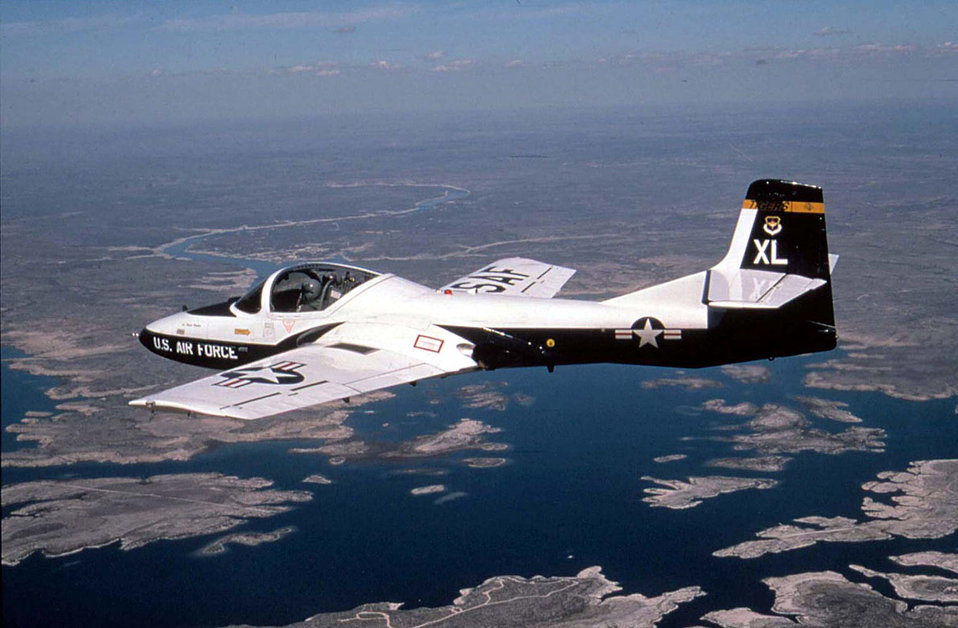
T-37 Tweet

FILE PHOTO -- A T-37 Tweet aircraft from the 85th Fighter Training Squadron, Laughlin AFB, Texas, flies over Lake Amistad during a training mission. The T-37 Tweet is a twin-engine jet used for training undergraduate pilots, undergraduate navigator and tactical navigator students in fundamentals of aircraft handling, and instrument, formation and night flying. The twin engines and flying characteristics of the T-37 give student pilots the feel for handling the larger, faster T-38 Talon or T-1A Jayhawk later in the undergraduate pilot training course. The instructor and student sit side by side for more effective training. The cockpit has dual controls, ejection seats and a clamshell-type canopy that can be jettisoned.